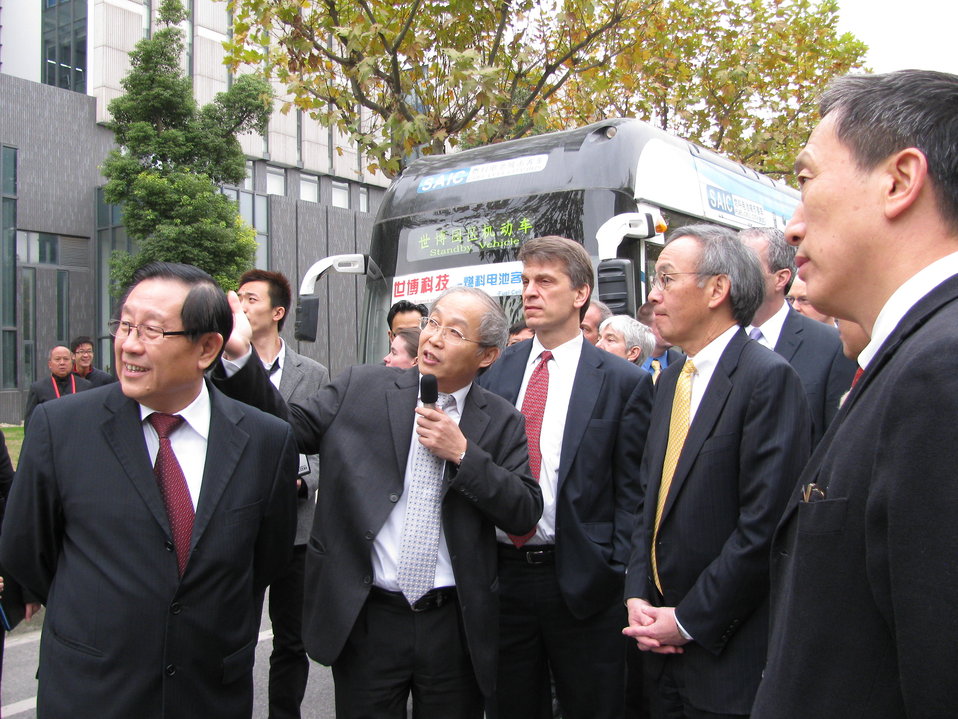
Shanghai 037